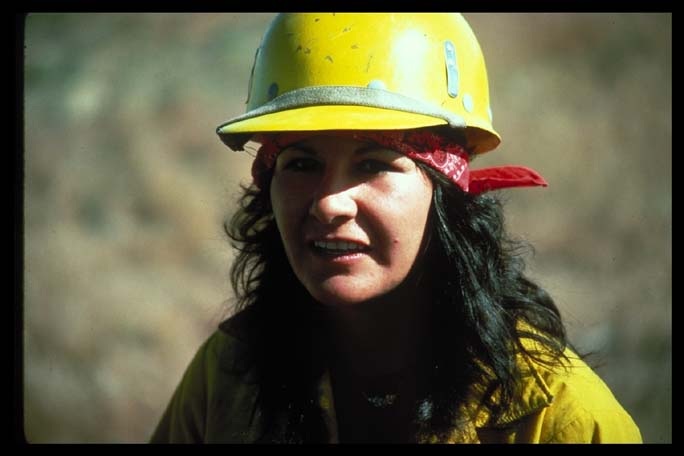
Wildland firefighter